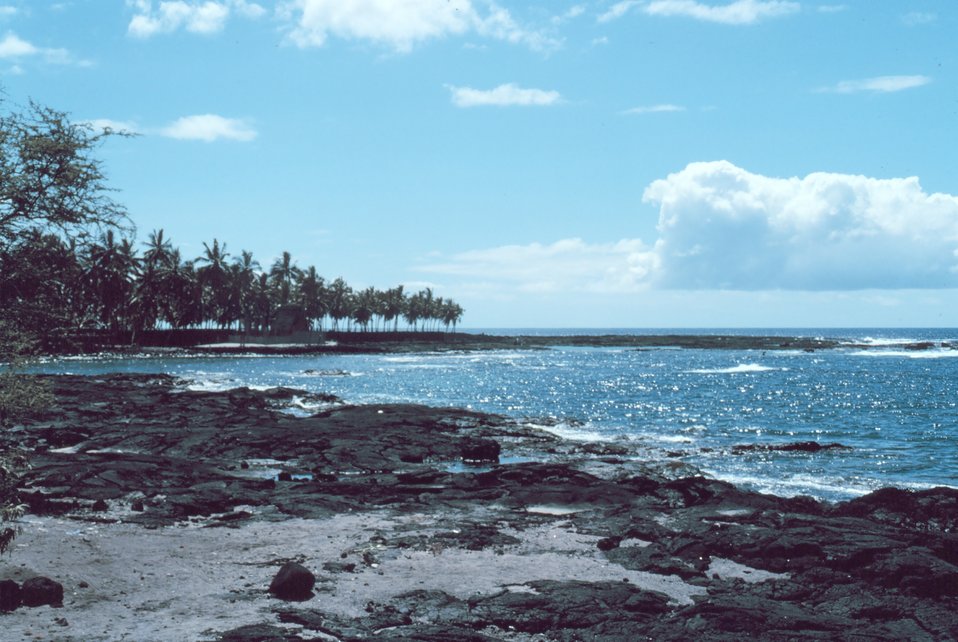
A favorite diving spot at the City of Refuge